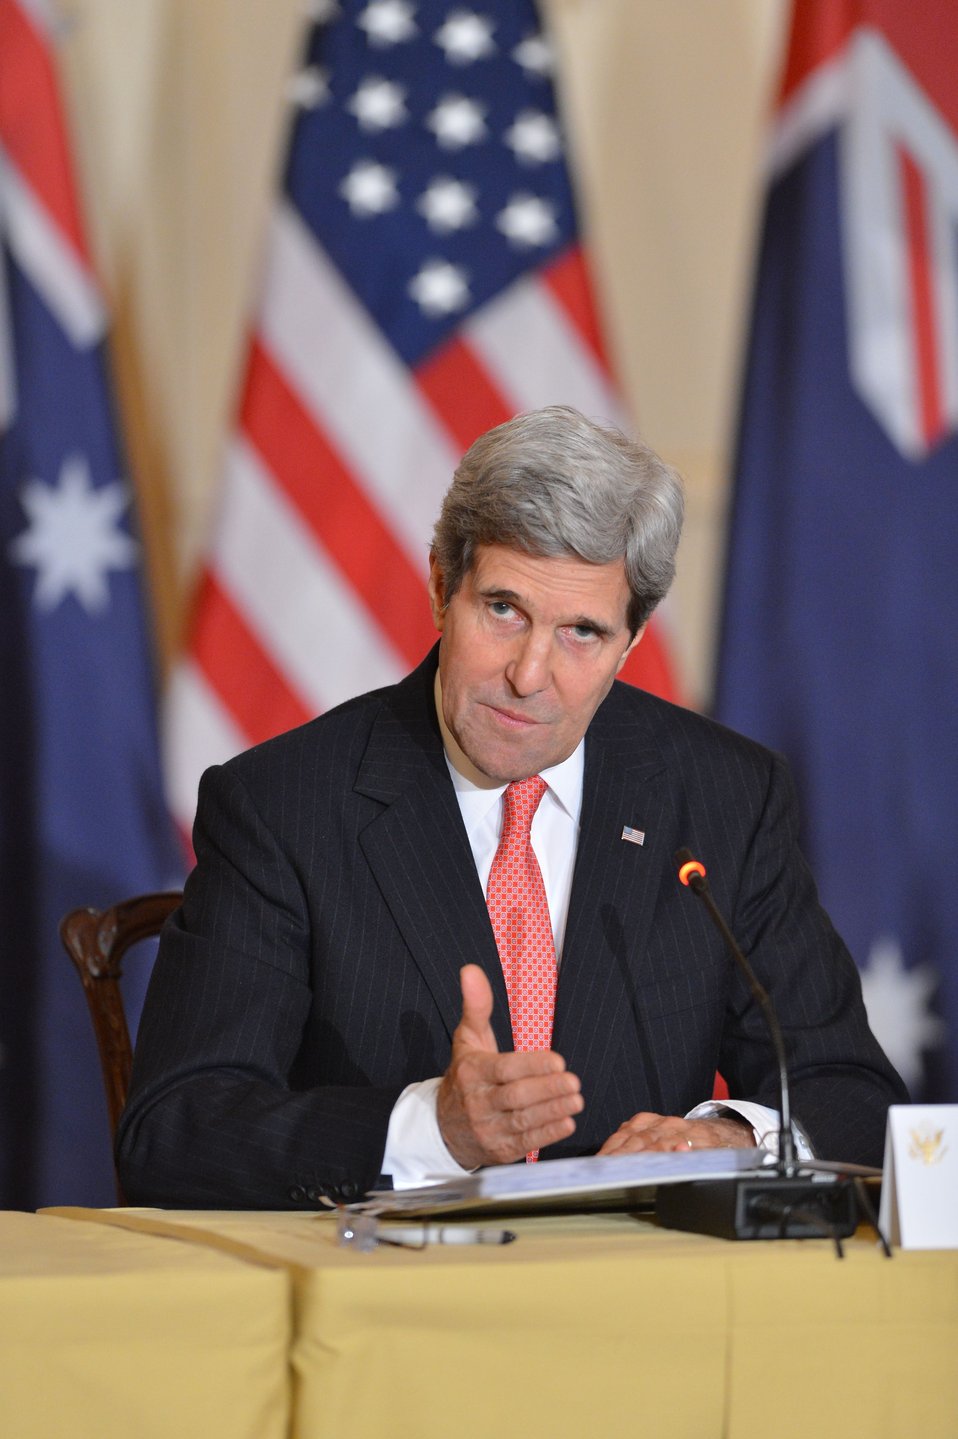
Secretary Kerry Addresses Reporters at the Australia-United States Ministerial Consultations

U.S. Secretary of State John Kerry delivers remarks during the Australia-United States Ministerial Consultations joint press conference with U.S. Secretary of Defense Chuck Hagel, Australian Foreign Minister Julie Bishop, and Australian Defence Minister David Johnston at the U.S. Department of State in Washington, D.C., on November 20, 2013.